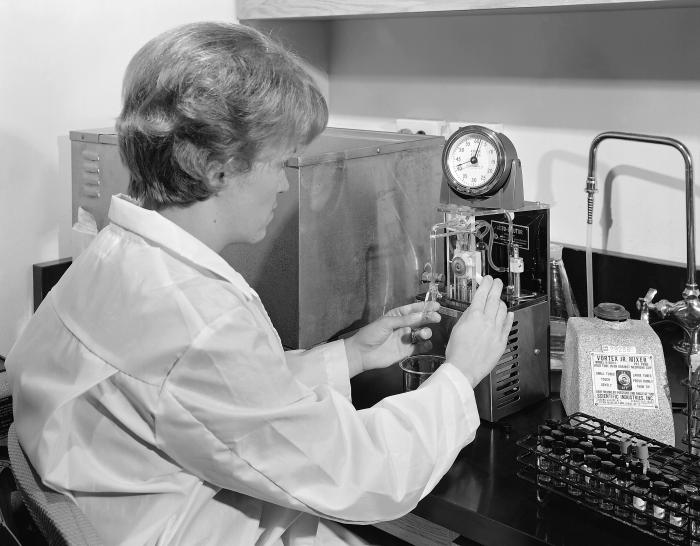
This historic 1966 image depicted a laboratory technician using a manual method for conducting an alkaline phosphatase (ALP) determination.